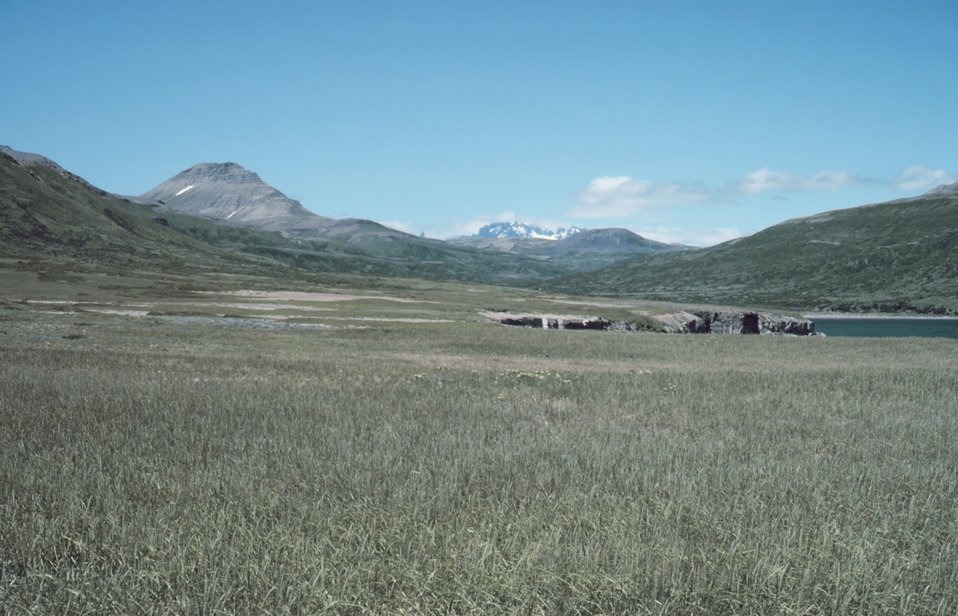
From the bluff above the south shore of Aniakchak Bay